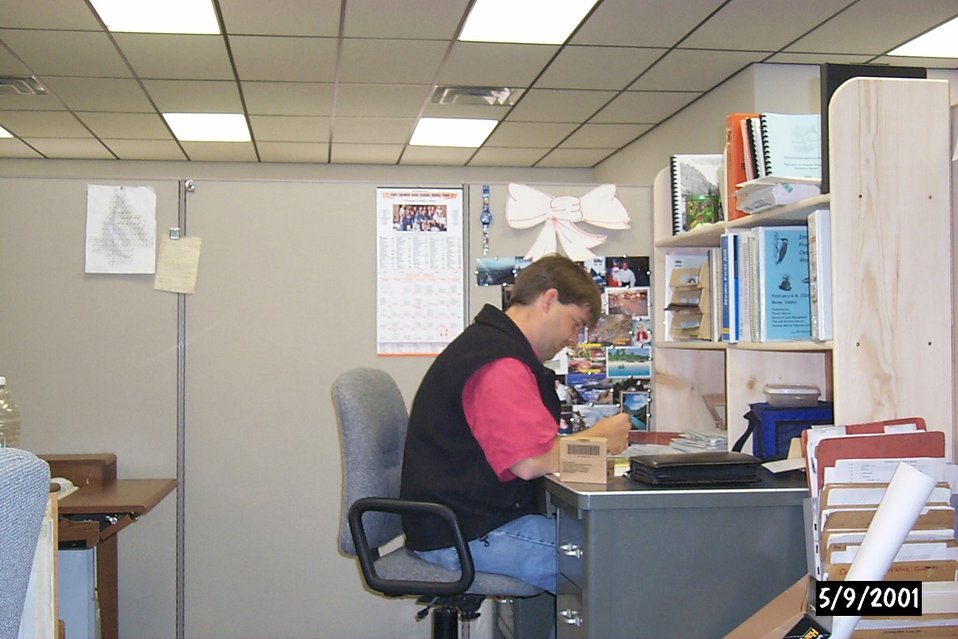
Office People Salmon Field Office UCSC Upper Columbia Salmon Clearwater District